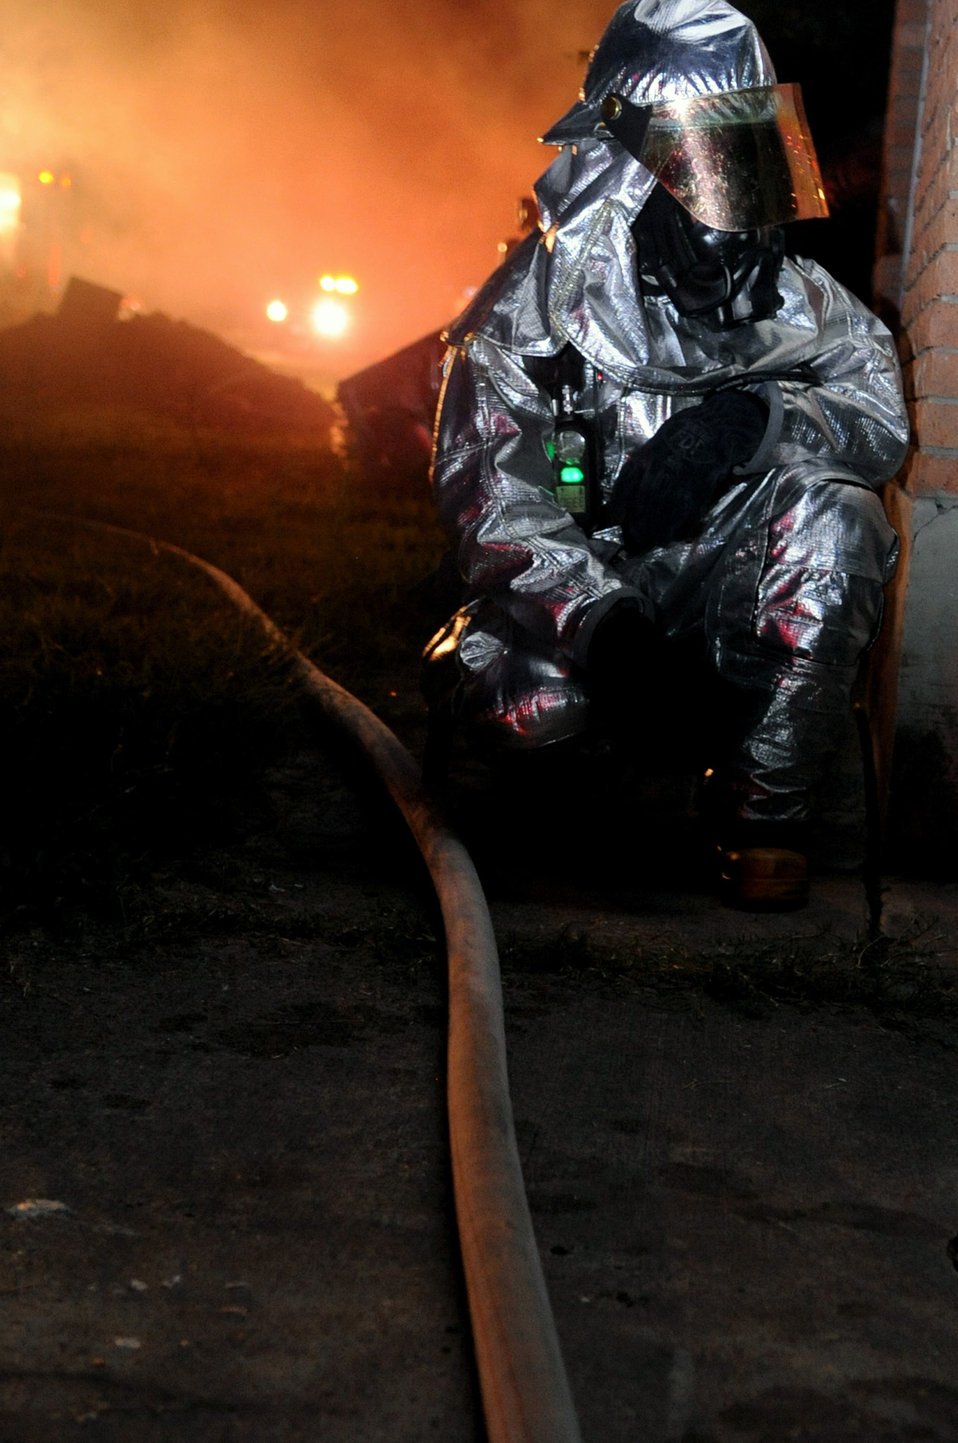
Catching a breath

A 2nd Civil Engineer Squadron firefighter participates in a simulated fire exercise July 28, 2011, at Barksdale Air Force Base, La. The scenario was part of a joint training exercise between Barksdale AFB and local firefighters.